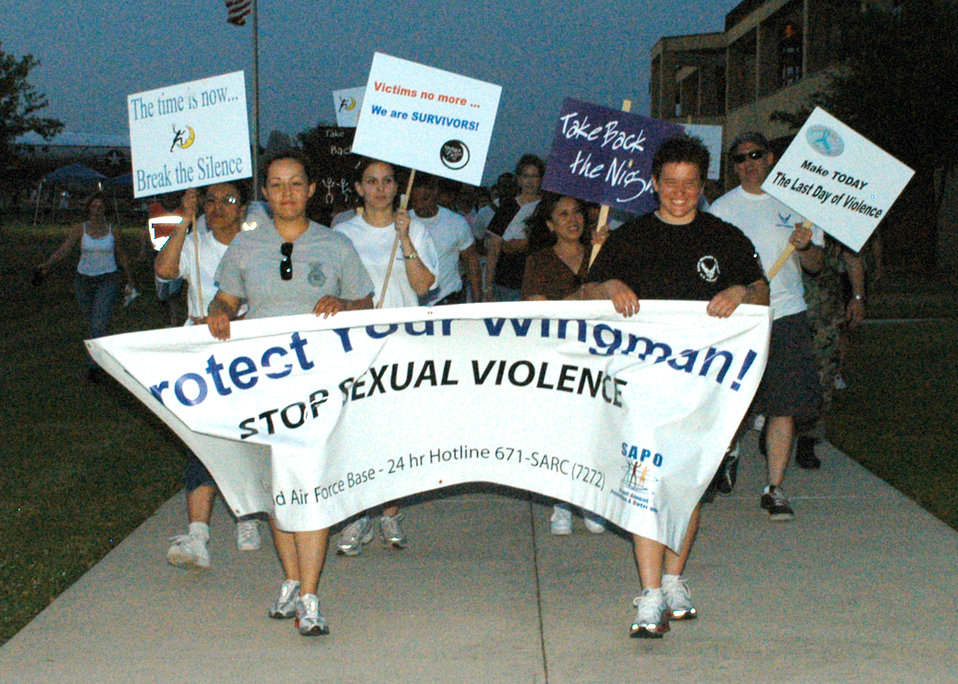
Sexual assault prevention director is a myth buster

Airman 1st Class Glorya Nava (left) and Airman Ashley Hess march during